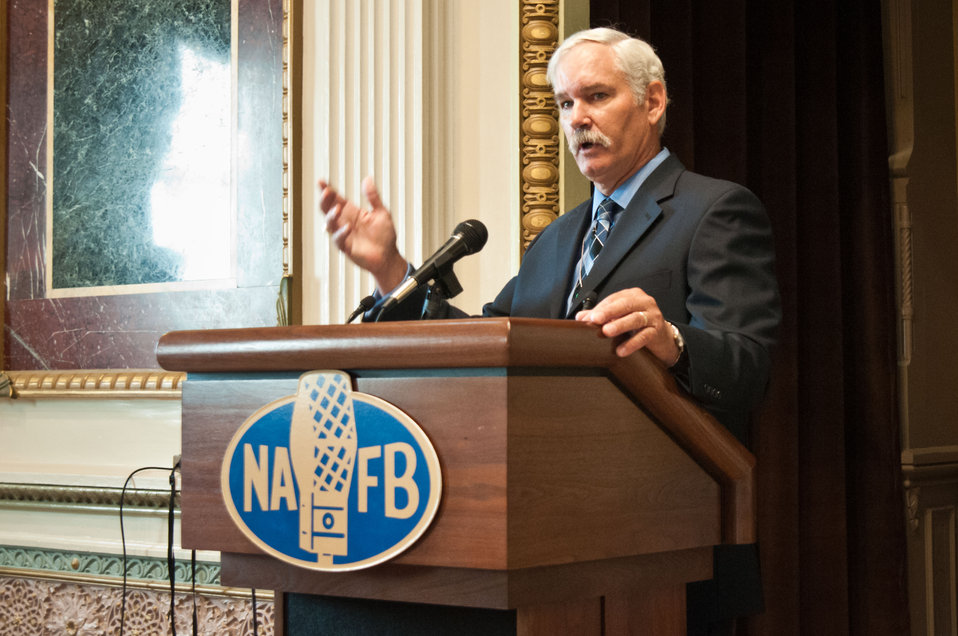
Farm and Foreign Agriculture Services Acting Under Secretary Michael Scuse spoke about American production agriculture at the Spring National Association of Farm Broadcasters (NAFB), “Washington Watch” member retreat in Washington, D.C. This year the meeting was held in the Eisenhower Executive Office Building, Indian Treaty Room on Tuesday, April 24, 2012, featuring United Sates Department of Agriculture and Obama Administration officials. This opportunity provides an occasion to highlight efforts to rebuild and revitalize rural America, including efforts for the agricultural community. NAFB is the recognized and trusted source of agricultural and rural lifestyle information for America with approximately 200 members who broadcast via radio in nearly every state in the country.